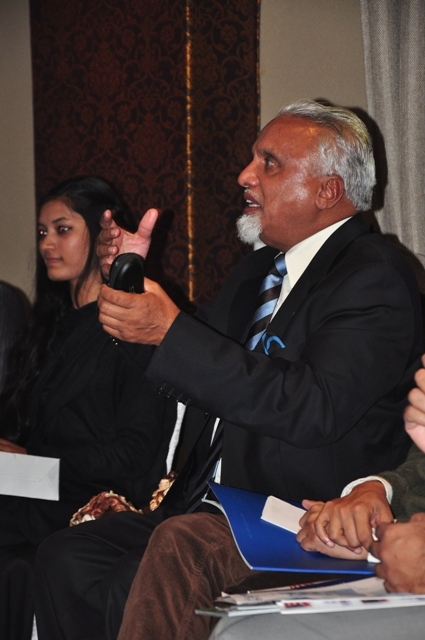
Workshop Participants engaged in group discussion.